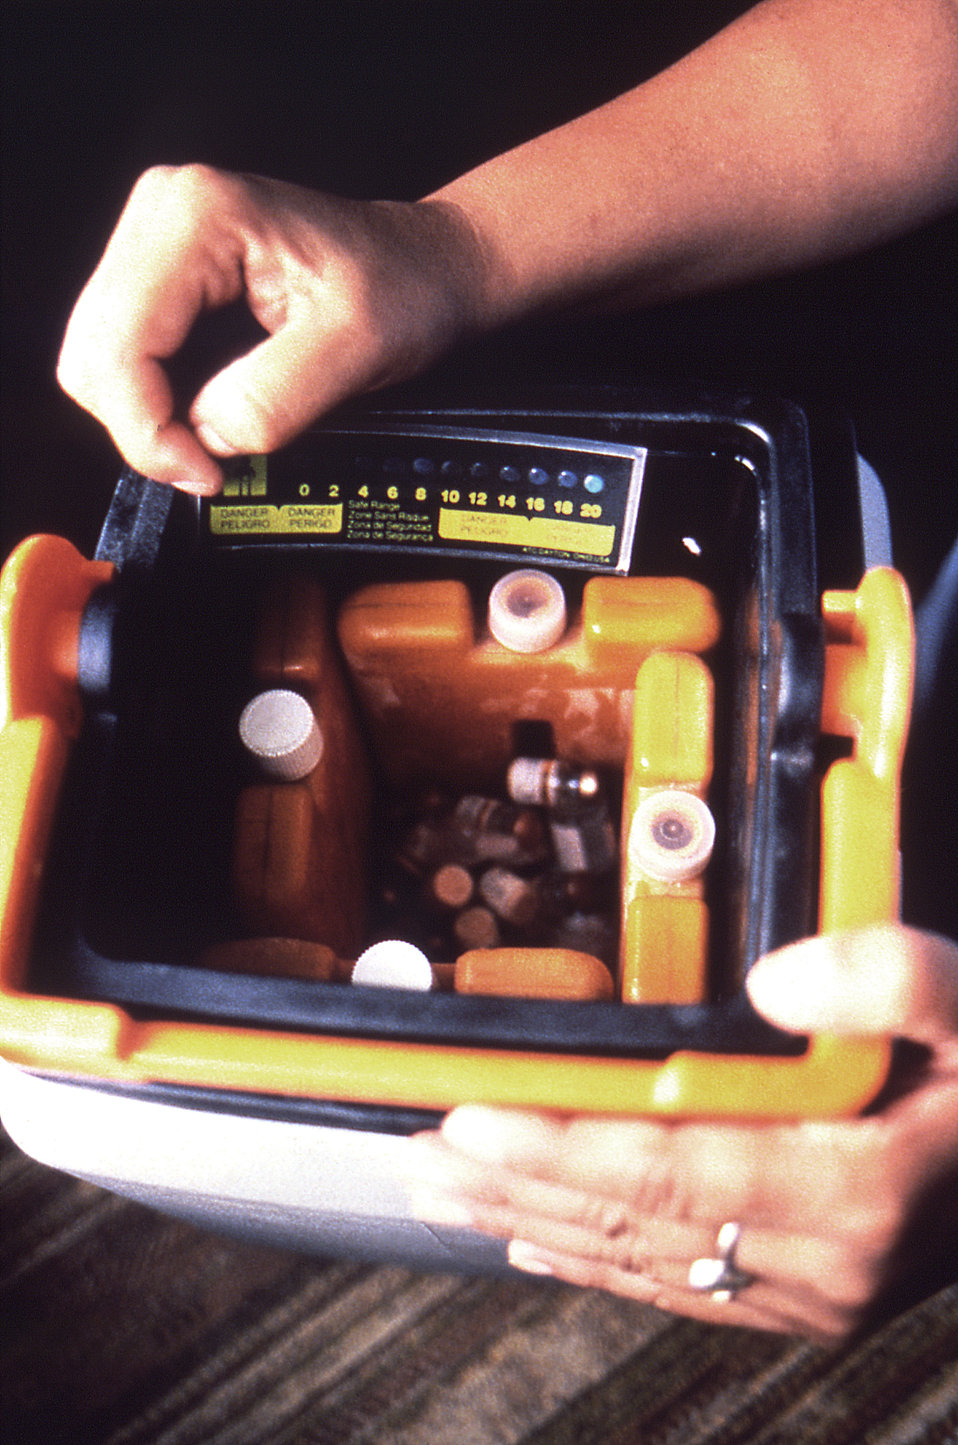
This was a thermally-controlled vaccine carrying case, which was equipped with cooling canisters, and a thermal readout that revealed whether the temperature had dropped below, or had risen above the recommended safe zone. Carrying canisters like the one depicted here, are used by public health workers who must travel to rural areas, in order to deliver vaccines to the inhabitants of difficult to access locations.